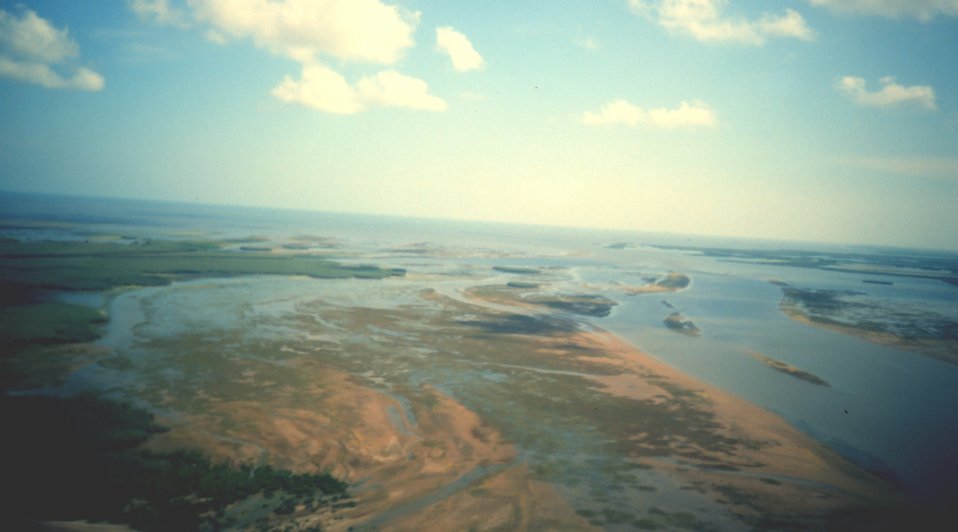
Aerial view of Mississippi Delta wetlands adjacent to Pass a Loutre